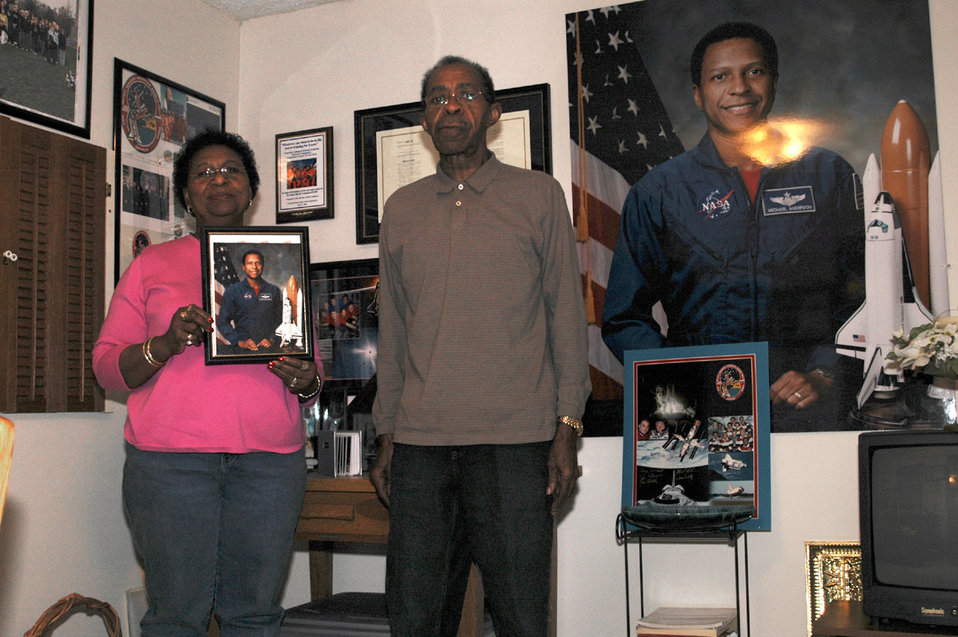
Honoring an astronaut

FAIRCHILD AIR FORCE BASE, Wash. (AFPN) -- Barbara and Bobby Anderson, parents of astronaut Lt. Col. Michael Anderson, hold up a picture of their son in the basement of their Spokane, Wash., home. Colonel Anderson was one of only a handful of African-American astronauts and one of seven crewmembers aboard the Space Shuttle Columbia when it exploded on re-entry just minutes before its scheduled touchdown Feb. 1, 2003.